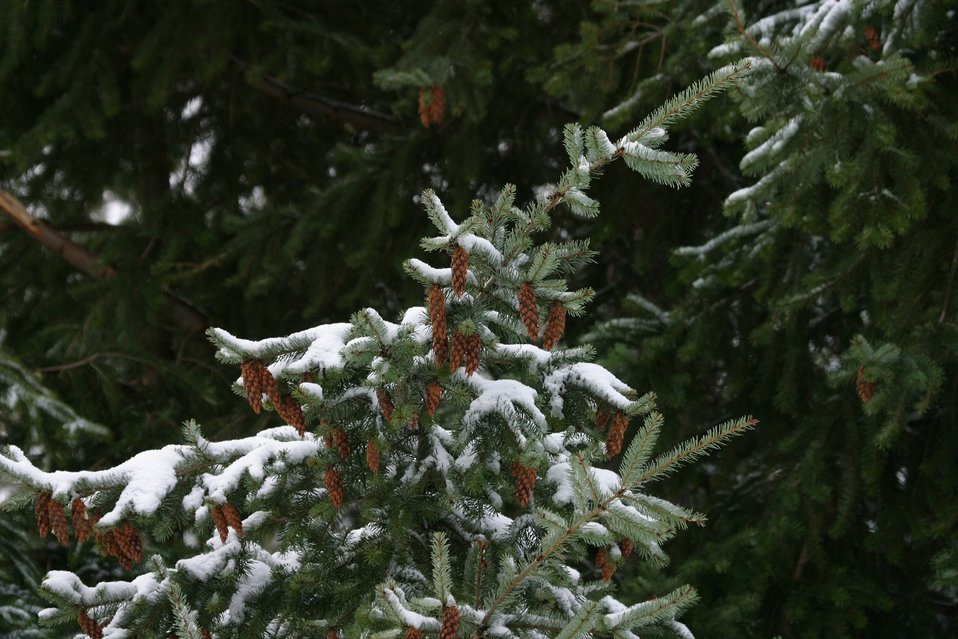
Snow and ice on Douglas Fir Bows and cones during the storm of January 2004.